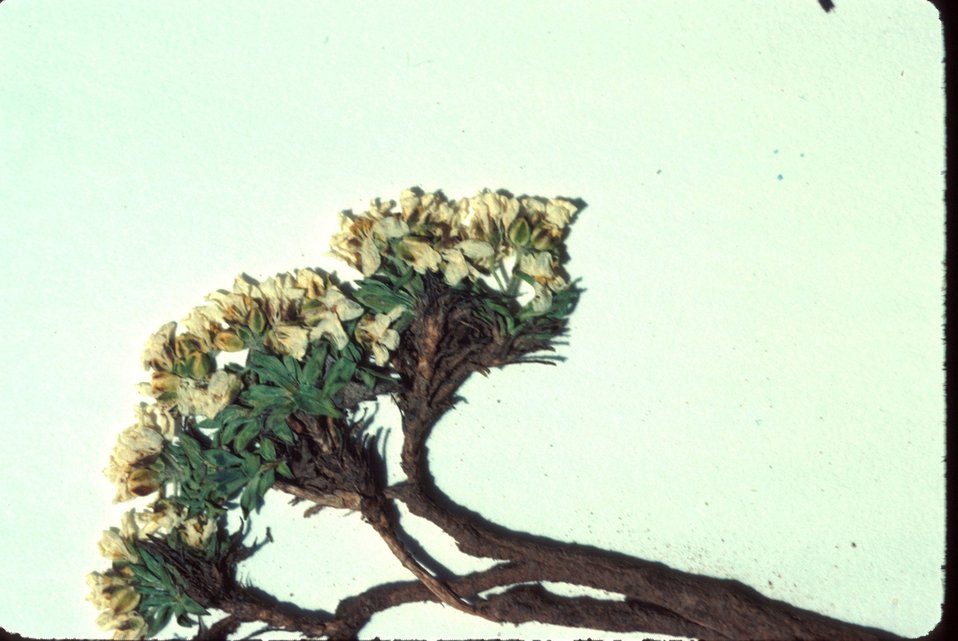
Draba douglasii Wildflower